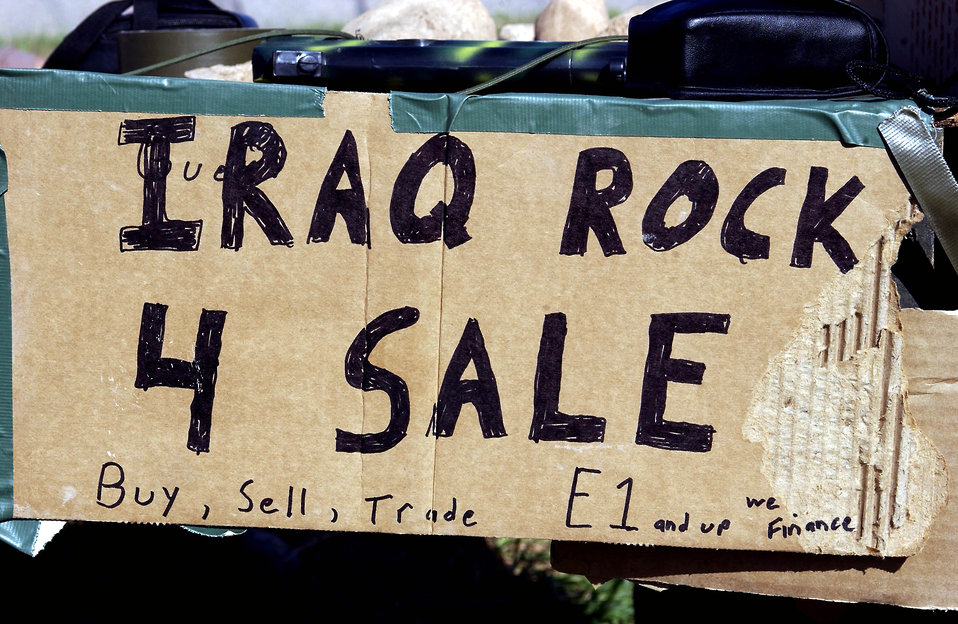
Real estate for sale

OPERATION IRAQI FREEDOM -- The rock merchants' sign to passing aircrews at Bashur Airfield in northern Iraq tells it all. Three airmen from the 86th Expeditionary Contingency Response Group at Ramstein Air Base, Germany, are selling rocks to passing aircrews as a way to let off steam from their jobs on the flightline.